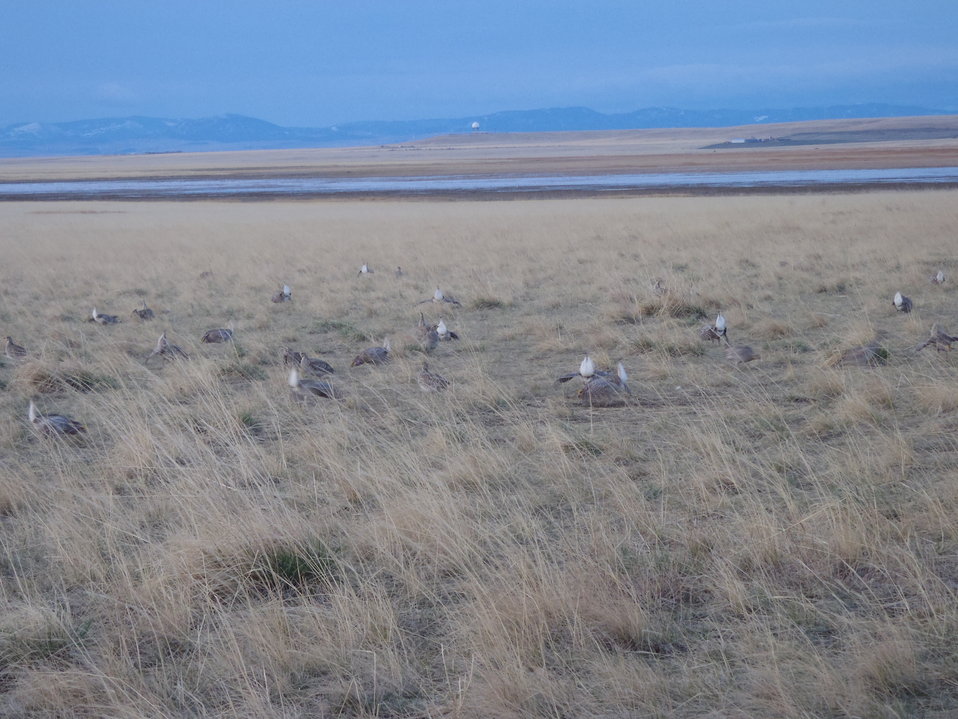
Sharp-tailed Grouse

The mating routine of sharp-tailed grouse involves males displaying communally at a traditional site (one used year after year). This site is known as a “lek.” Males compete for mates by performing a ritualized dance in conjunction with calling (often a booming sound) and inflating purplish air sacs along their necks. Females approach the edge of the lek, observe and eventually select a dance participant to mate with.